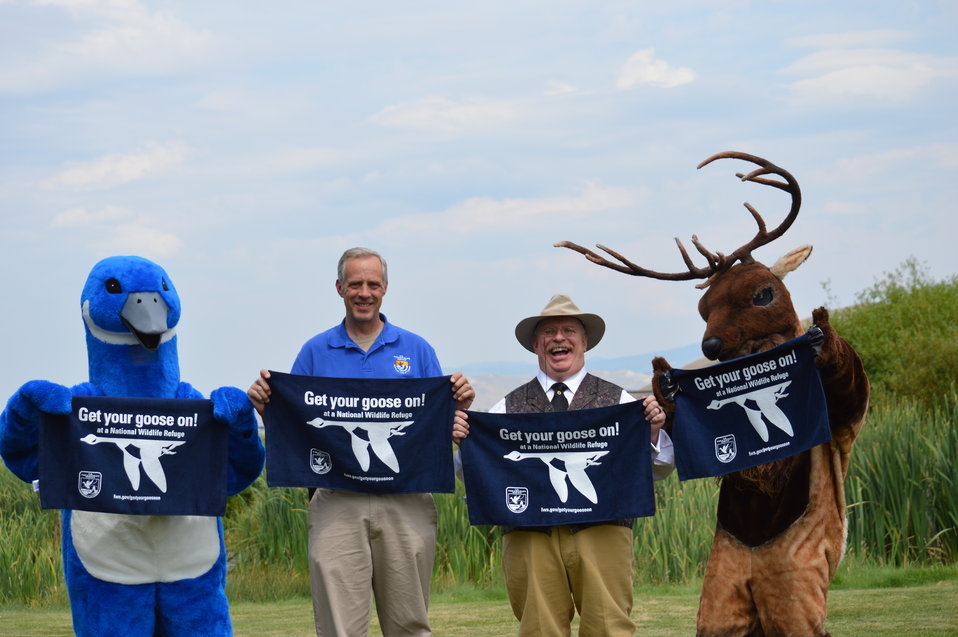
Get Your Goose On! - National Elk Refuge Style

On August 10, 2012 the U.S. Fish and Wildlife Service and Partners celebrated the 100 year anniversary of the establishment of the National Elk Refuge. In these photos, young attendees, along with Puddles the Blue Goose and the National Elk Refuge's mascot, showed us how to Get Your Goose On! with style.